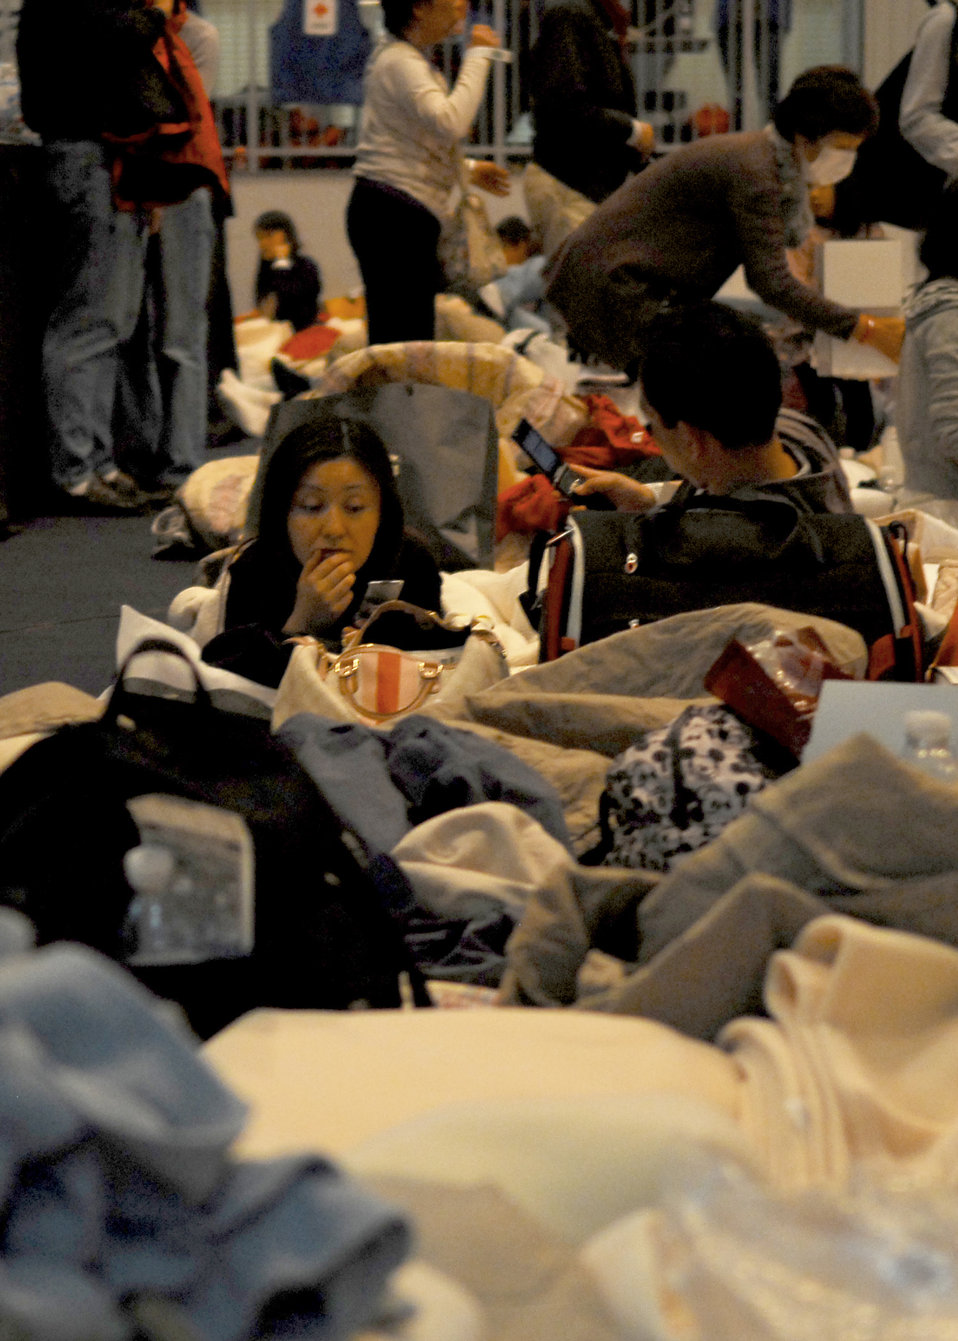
Taking shelter

Passengers of a commercial airline flight take shelter March 11, 2011, at Yokota Air Base, Japan. Base officials there provided food and shelter to passengers of aircraft diverted from Narita International Airport in Tokyo, due to an 8.9-magnitude earthquake.